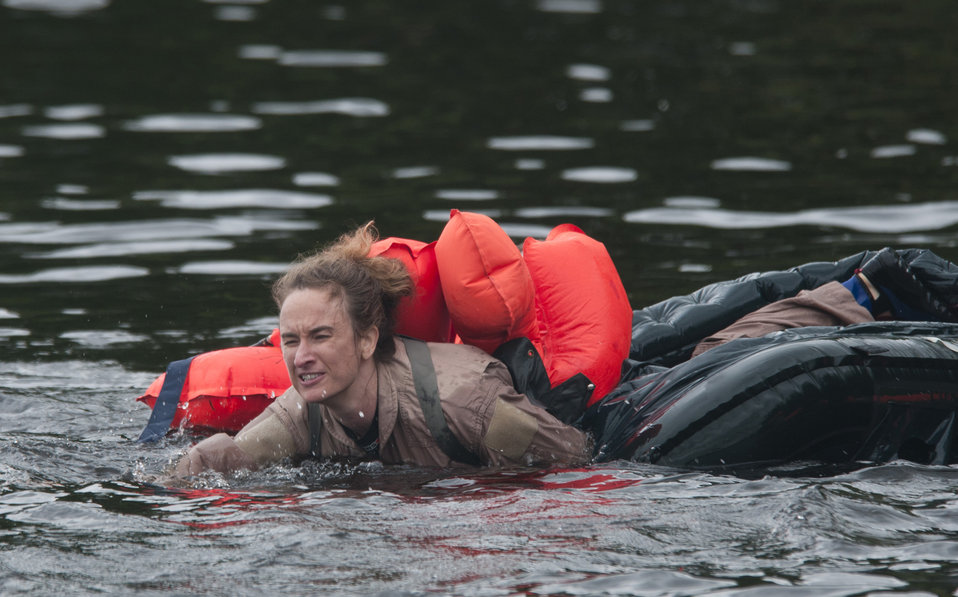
Water survival training

Tech Sgt. Jill Shepard crawls out of a life raft June 11, 2011, during aircrew survival training in the St. Croix River near Hastings, Minn. Sergeant Shepard is assigned to the Minnesota Air National Guard's 133rd Airlift Wing.